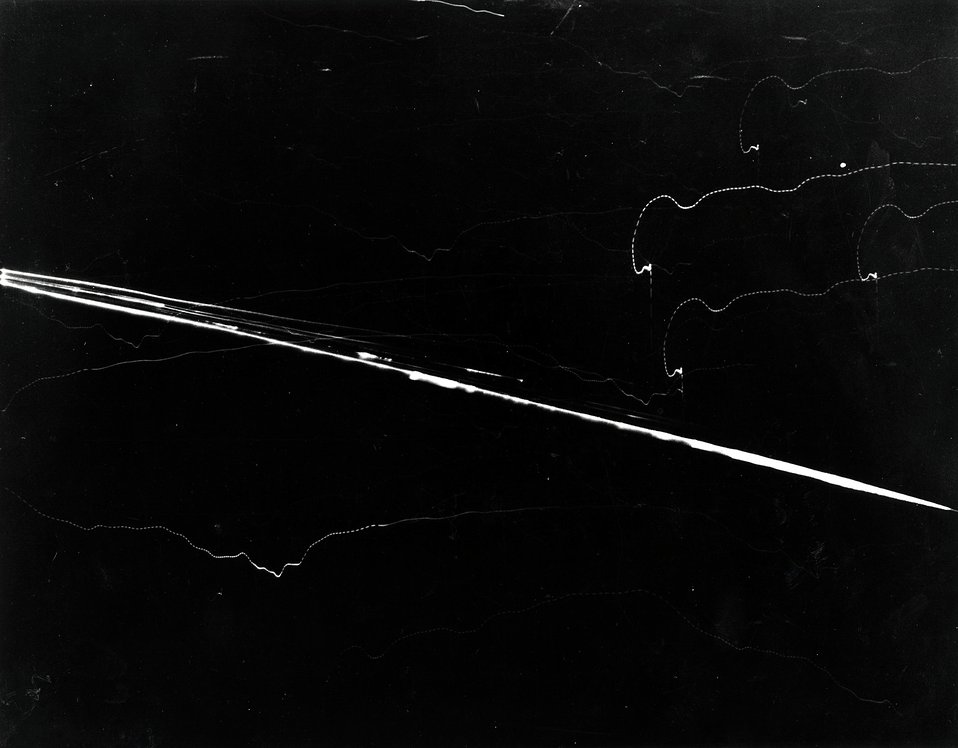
Photo taken from aircraft camera of streaks made by the re-entry of a mockup space reactor in a flight test in May 1963.